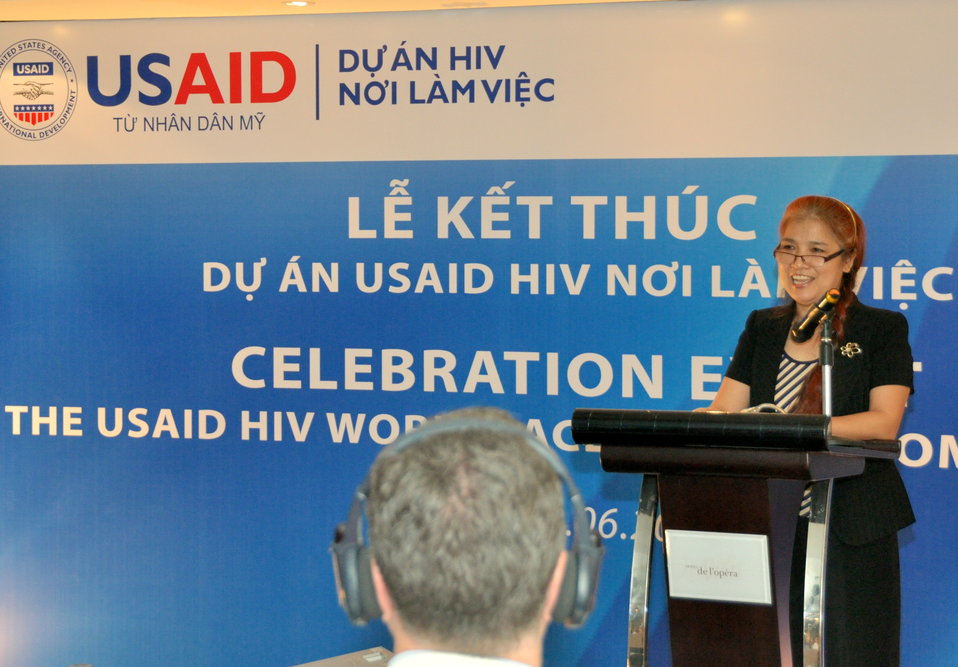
Mrs. Pham Hoai Giang of USAID HIV Workplace Project speaks at the completion event.

Hanoi, June 20, 2013.